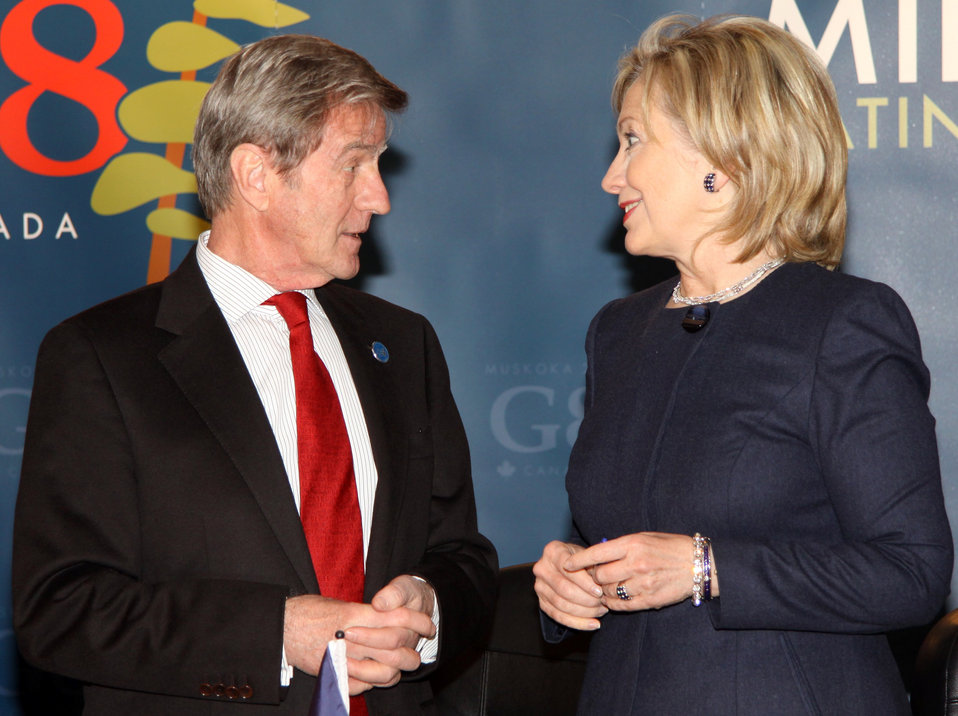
Secretary Clinton Meets With French Foreign Minister

U.S. Secretary of State Hillary Rodham Clinton meets with French Foreign Minister ernard Kouchner during the G8 Foreign Ministers Meeting in Ottawa, Canada March 29, 2010.